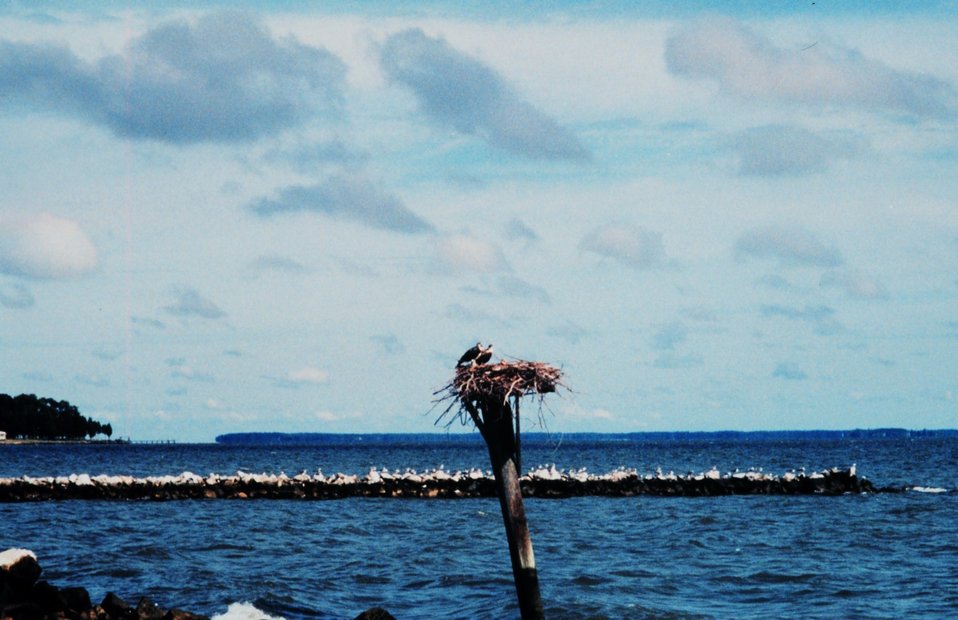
2 osprey - Pandion haliaetus - on nest and gulls in the background lining the jetty at the University of Maryland Horn Point Environmental Laboratory.